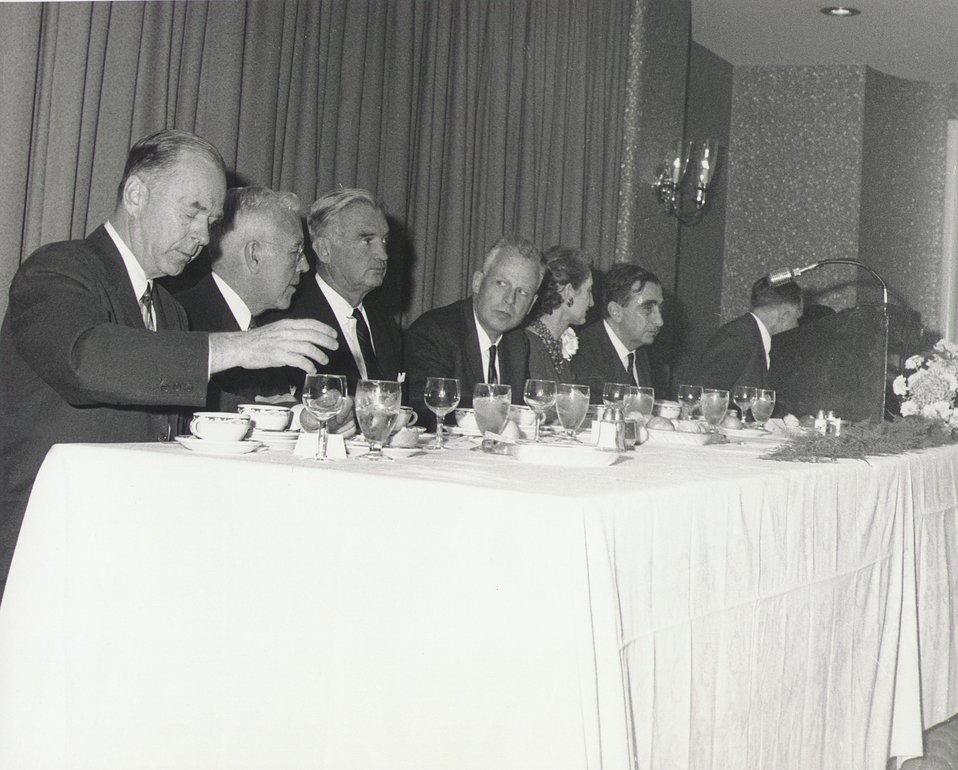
Fermi Award Ceremony for Teller in 1962.